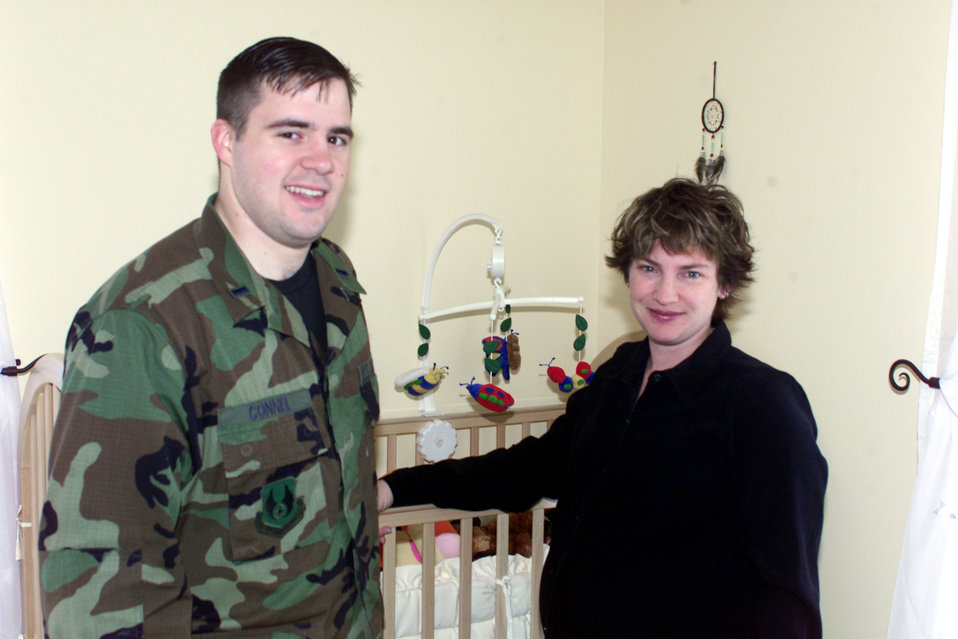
Breast-feeding despite cancer

HANSCOM AIR FORCE BASE, Mass. -- Jenn Connel (right) had her husband, 1st Lt. Brandon Connel, pose in their home nursery before their son, Grayson Riley, was born Dec. 22. Mrs. Connel is a breast cancer survivor who did not give up her dream of breastfeeding her son even though she had a double mastectomy.